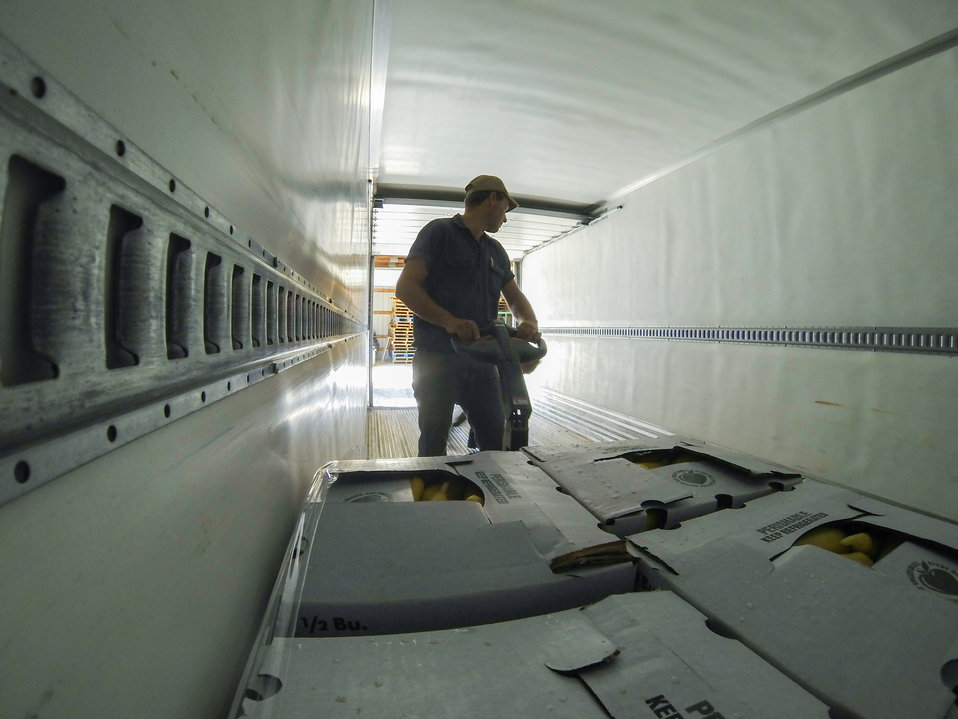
Kevin Kirby maneuvers a pallet of fresh picked squash onto a waiting tractor-trailer rig for shipment to a wholesaler, during the harvest process at Kirby Farms in Mechanicsville, VA on Friday, Sept. 20, 2013. Kirby Farms devotes 200 acres of the farm to eggplant, spinach, beets, tomato, jalapeno peppers, melons and a variety of greens. Soybeans and small grain are grown on the remaining 300 acres. The fertile Virginia soil and their management practices, allows Kirby Farms to double and triple crop fields with rotational crop selection. Wholesalers, who buy from this farm, sell the produce to major supermarkets in the Mid-Atlantic region, from North Carolina to Maryland. Restaurants in the local area prepare and serve their harvest to patrons in the Greater Richmond, VA Region.